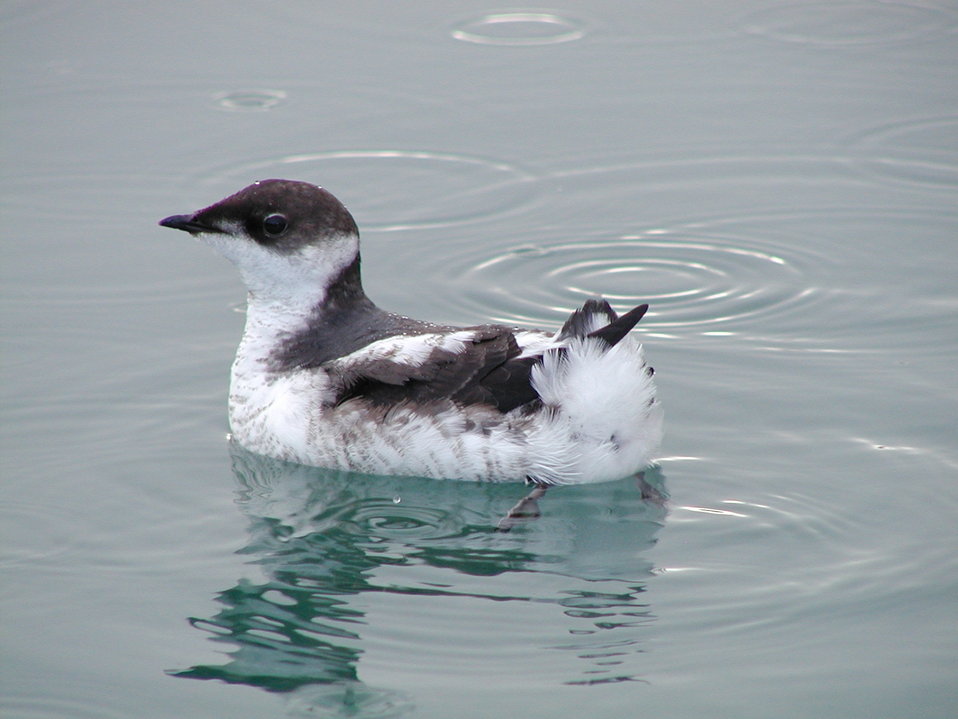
Juvenile Marbled Murrelet